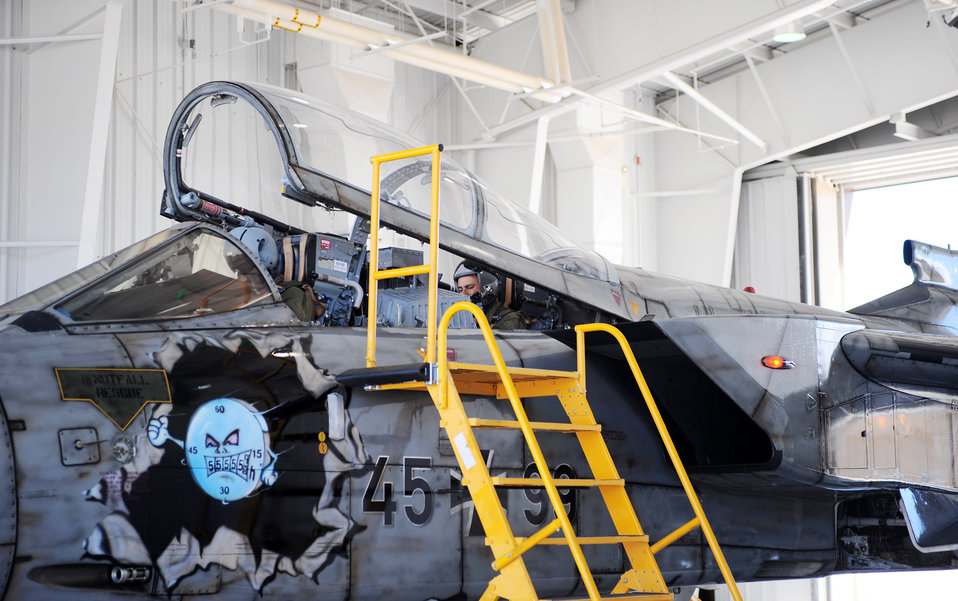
GAF FTC commemorates 55,555 flight hours

Col. Peter Klement, German air force Flying Training Center commander and Col. Jeff Harrigian, 49th Fighter Wing commander, prepare to fly a specially painted German Tornado from Holloman Air Force Base, N.M., Oct. 13, 2009. This flight marked the completion of 55,555 Tornado flight hours of training at Holloman by German air force pilots. .